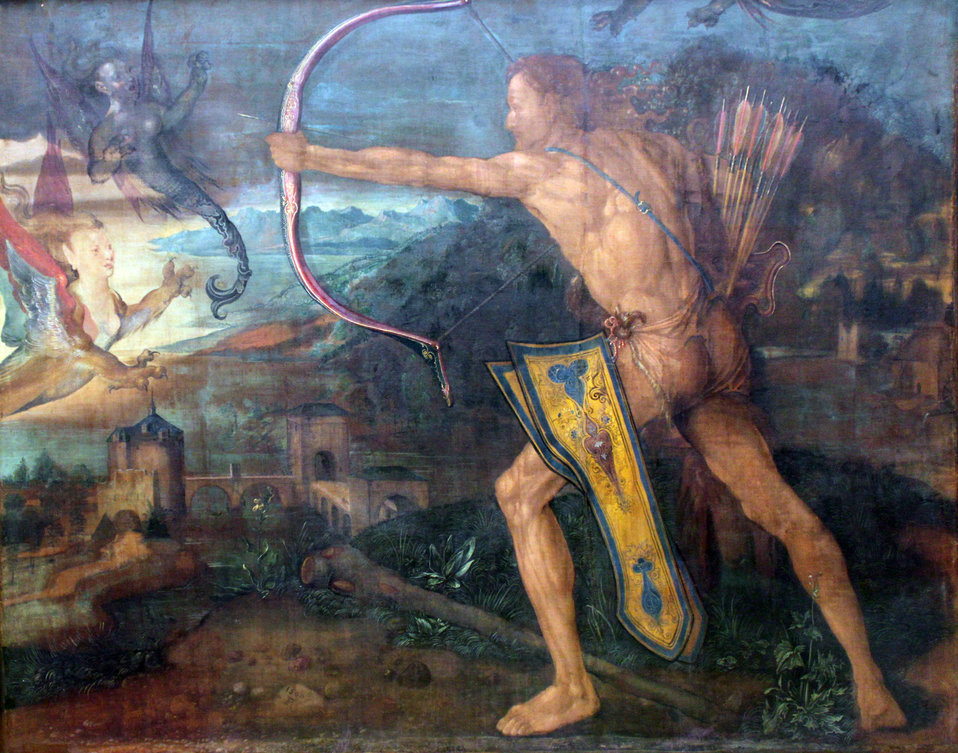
1500 Duerer Herkules im Kampf gegen die stymphalischen Voegel anagoria